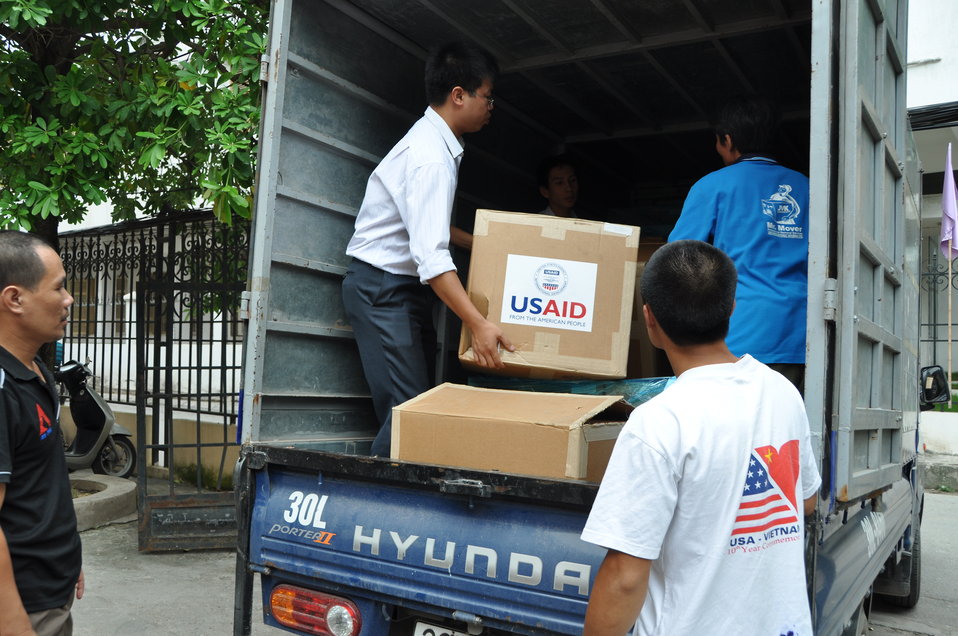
USAID supplies personal protective equipment in Hanoi